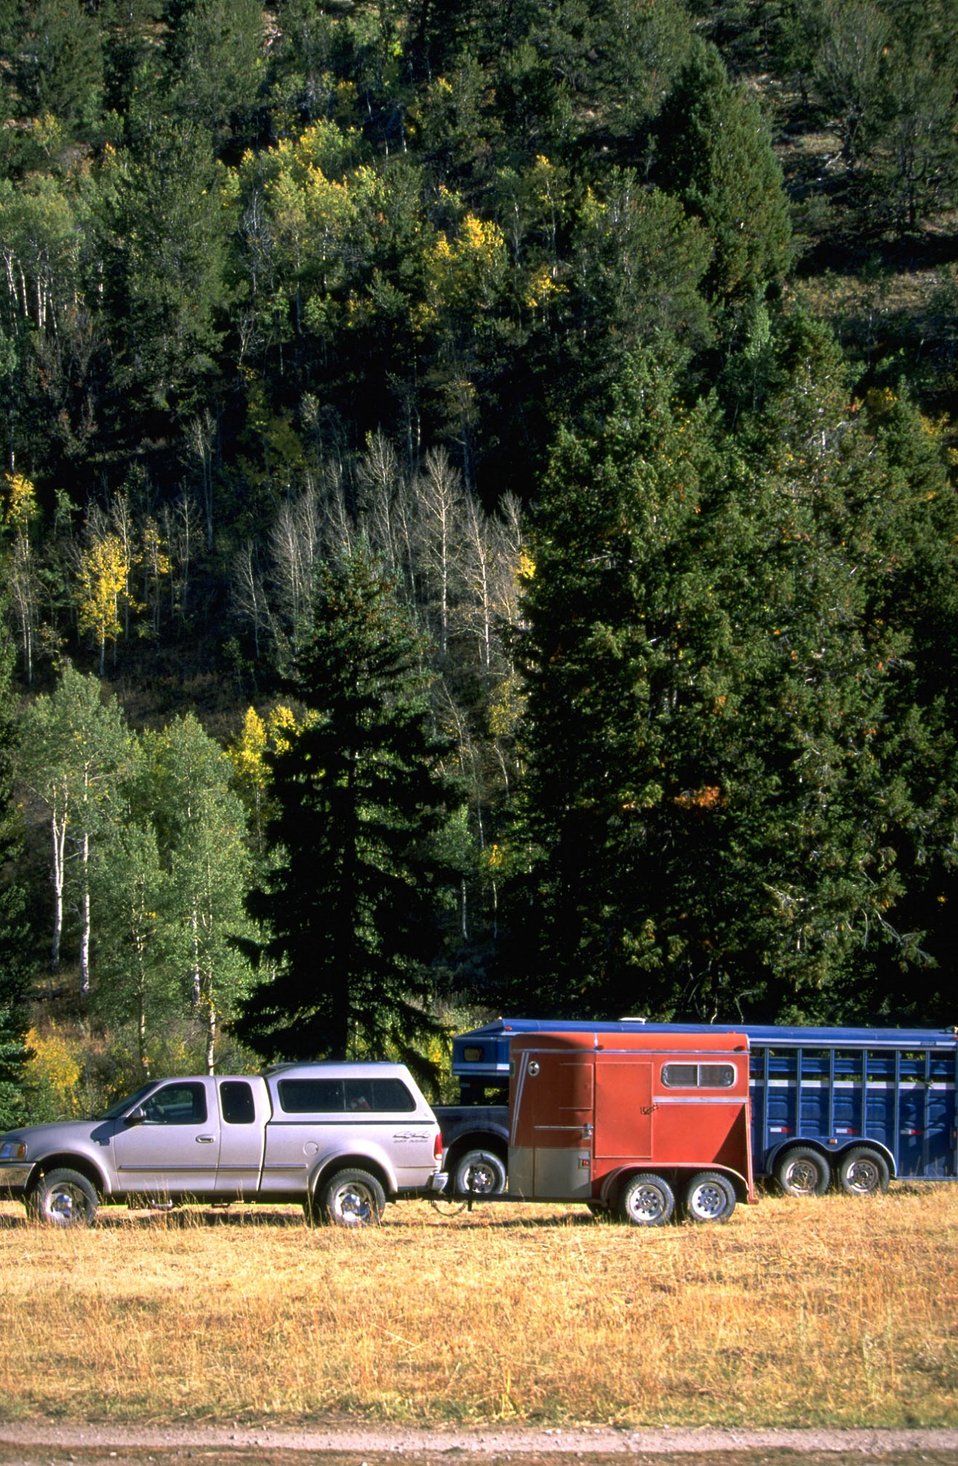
Pickup and horse trailer with forest in background